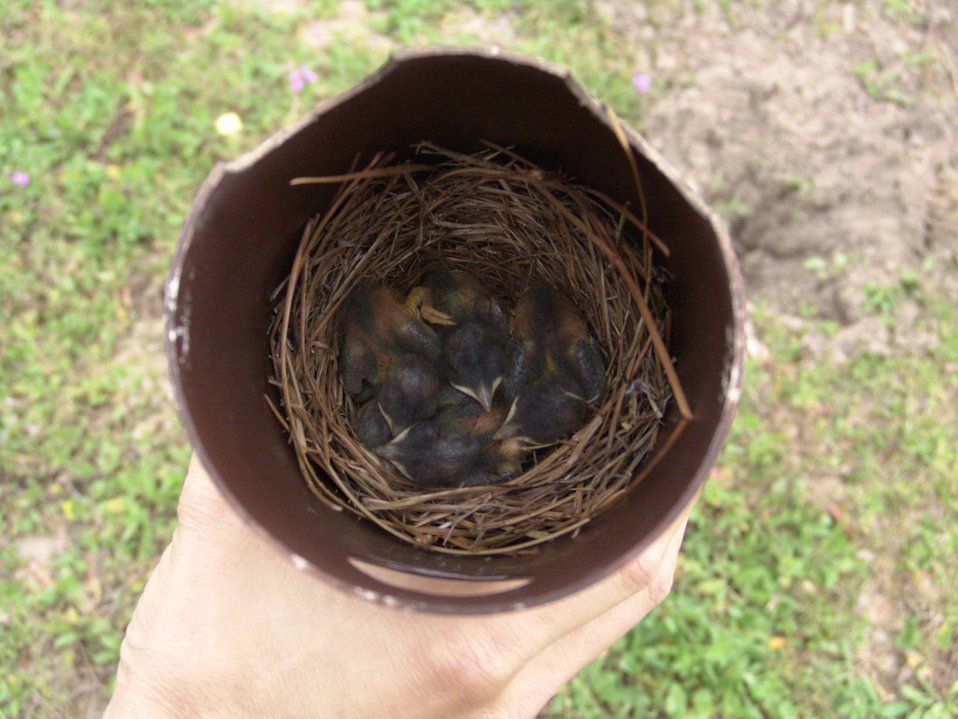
Fuels specialist is 'for the birds'

EGLIN AIR FORCE BASE, Fla. -- Bluebird hatchlings snuggle together on a cold morning. A typical nest has between three to five eggs, said Master Sgt. William Burke, a fuels specialist with the 96th Logistics Readiness Squadron here. After incubating for two weeks, the blue eggs hatch. It will take 16 to 22 more days for the hatchlings to leave the nest. Sergeant Burke has made about 25 birdhouses here for Eastern Bluebirds.